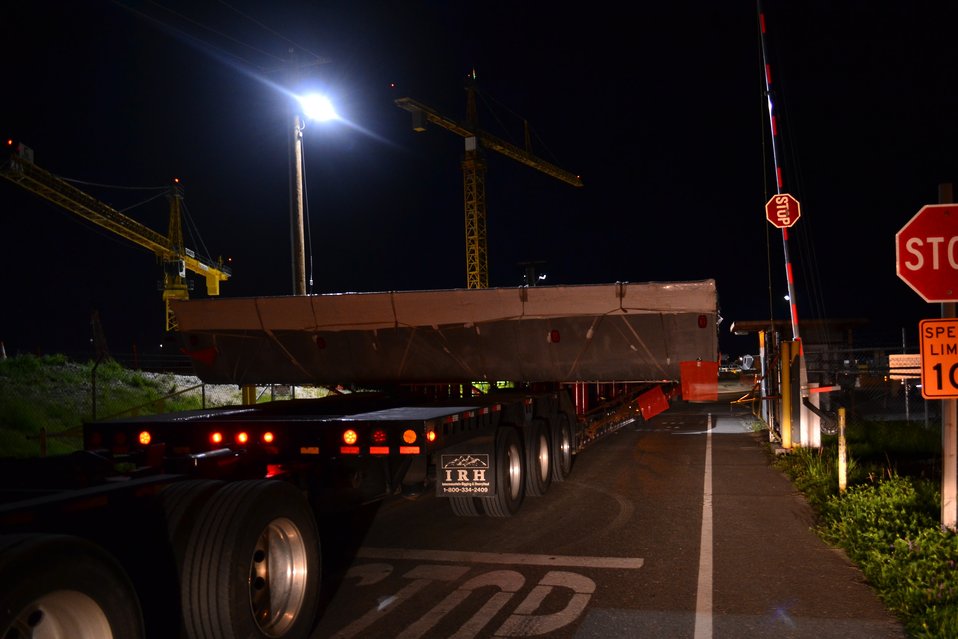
First giant gate arrives for Folsom Dam auxiliary spillway

The first of 12 giant gates arrives at Folsom Dam's new auxiliary spillway in Folsom, Calif., March 13, 2014, after a 600-mile journey from the Oregon Iron Works facility in Vancouver, Wash. The auxiliary spillway project is part of the Joint Federal Project, a $900-million cooperative effort to improve the safety of Folsom Dam and reduce flood risk for the Sacramento area.